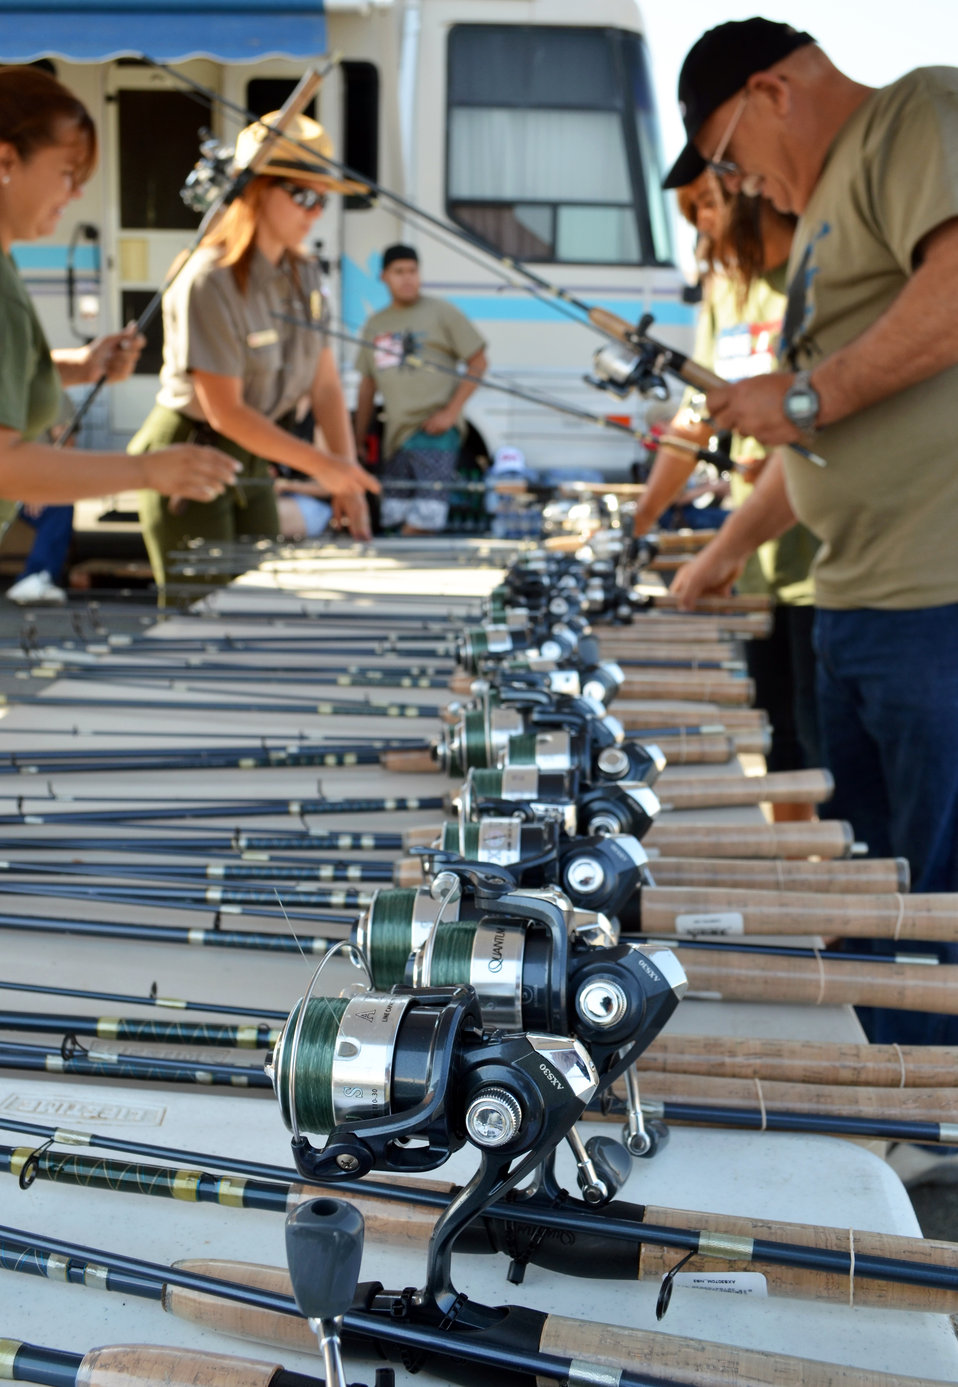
Reels and rods ready to rock (“Take a Warrior Fishing” event at Success Lake)

Wounded warriors and their families were presented fishing tackle so they could enjoy a day fishing during the 'Take a Warrior Fishing' event at Success Lake, located near Porterville, Calif., May 4, 2013. This is the second year the U.S. Army Corps of Engineers Sacramento District has hosted the event. Photo cropped for emphasis.